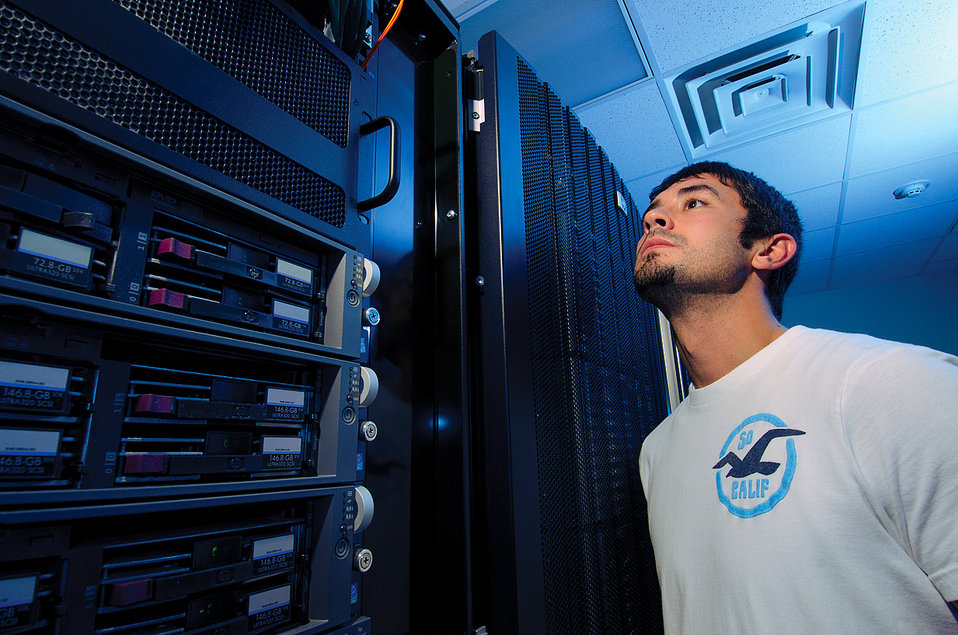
An employee of Senture, a full-service, 24/7 contact center headquartered in London, Ky., checks server equipment crucial to the company's day-to-day operations. Senture recently built a new facility to accommodate current and future growth, through Rural Development's (RD), Rural Economic Development Loan Program. Senture received funding to build the new facility with funding administered through Jackson Energy Cooperative, in London, Ky, on July 14, 2011.